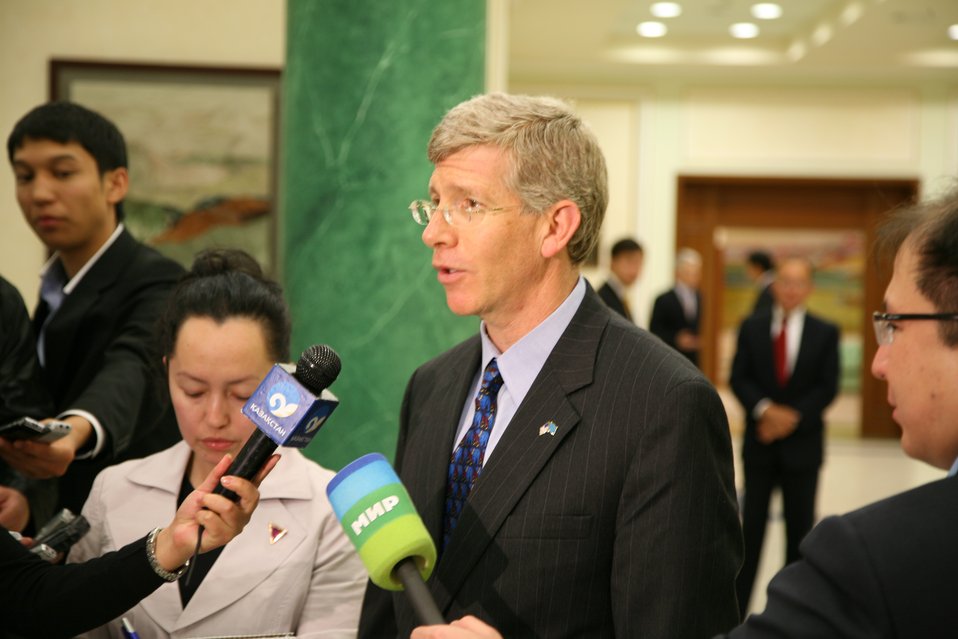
Kazakhstan 3